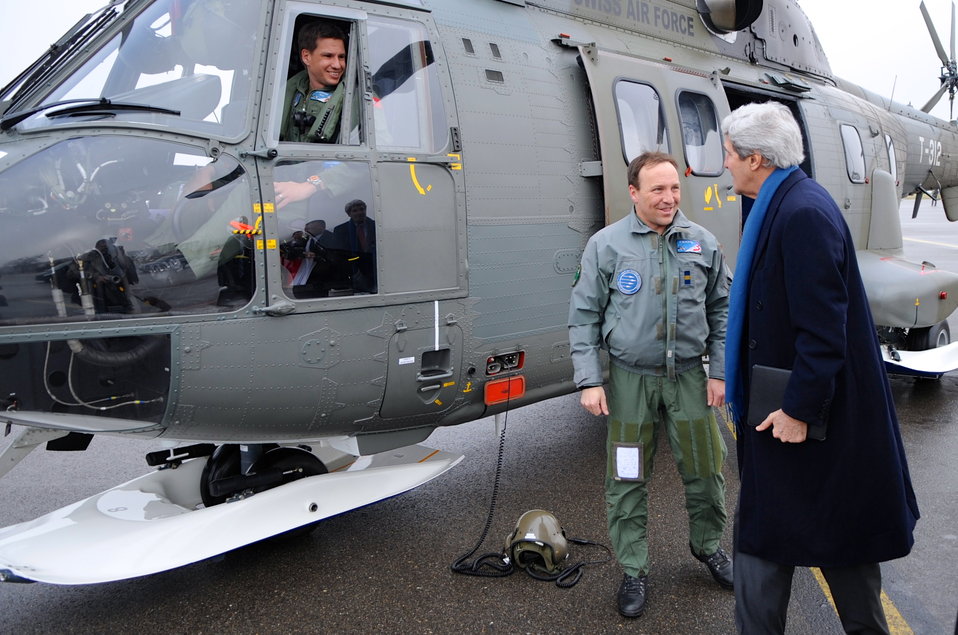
Secretary Kerry Thanks Swiss Airmen

U.S. Secretary of State John Kerry thanks the pilot and flight crew member of the Swiss Air Force helicopter that carried him from Davos, Switzerland, to Zurich on Jan. 25, 2014, after he attended the World Economic Forum.[State Dept. Photo/Public Domain]